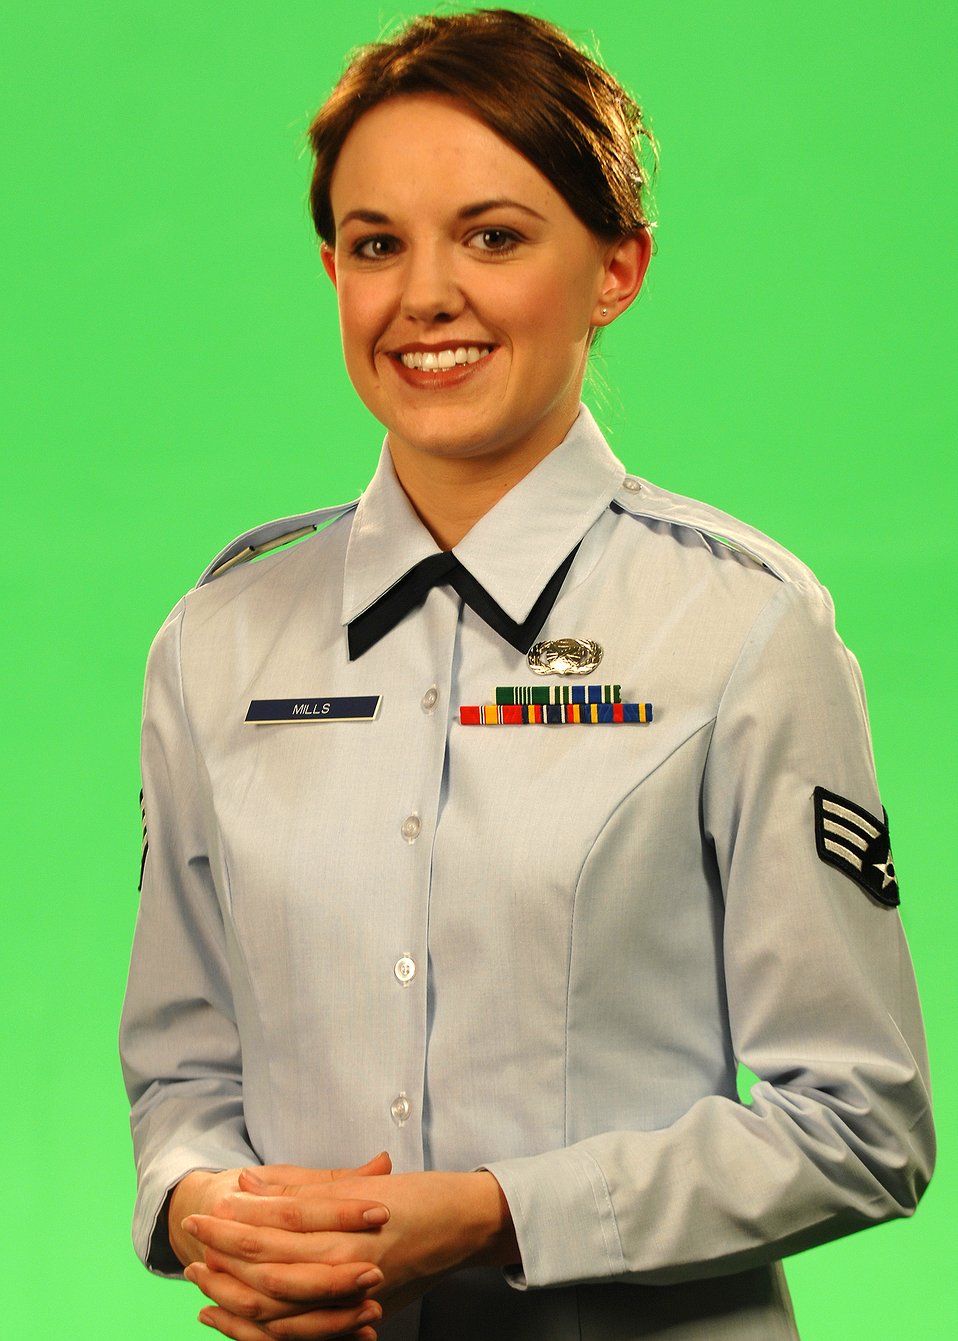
Virtual Tour Guides

Senior Airman Lana Mills, Air Force News Agency, serves as one of six virtual tour guides on the AIRFORCE.com Web site home page. The guides are designed to lend a personal touch to a Web site loaded with information for prospective recruits, parents, influencers and people wanting to find out more about the Air Force.